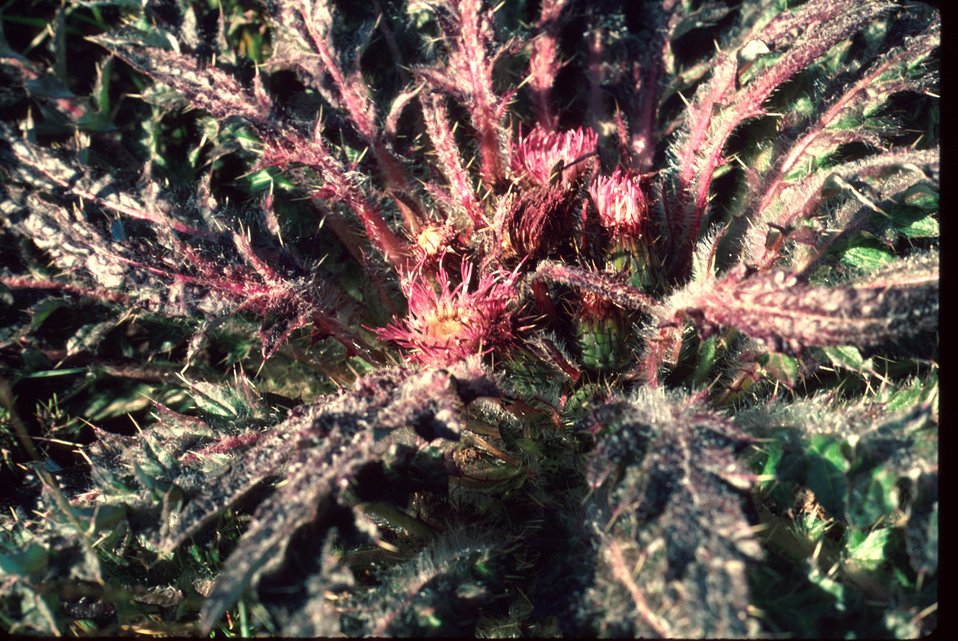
Cirsium, Thistle Pond along Mud Flat Road Owyhee area Wildflower